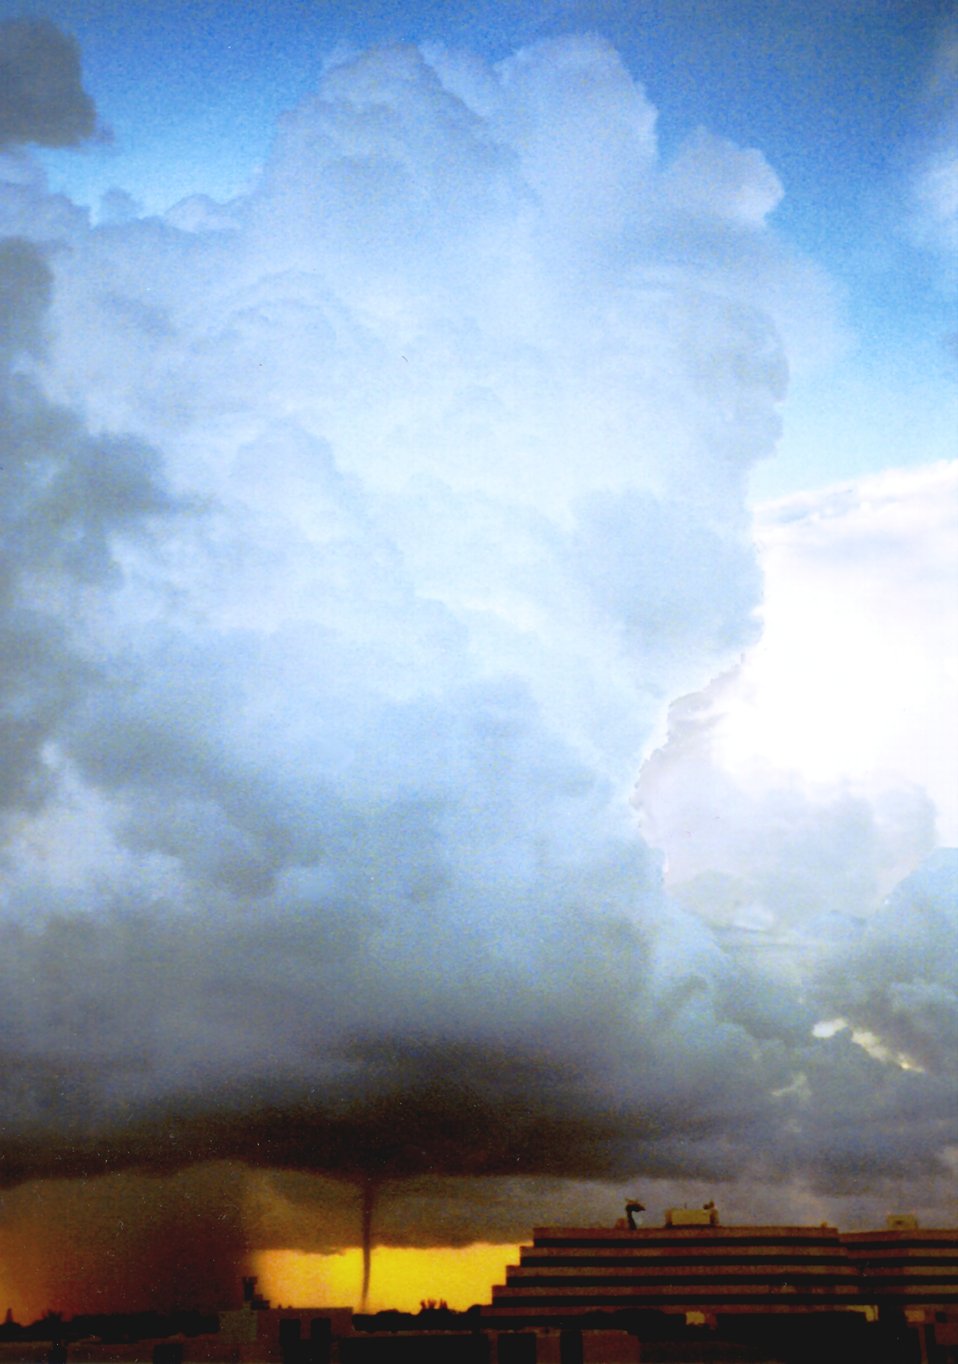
A waterspout off the coast of Miami. It later came ashore as an F0 tornado.